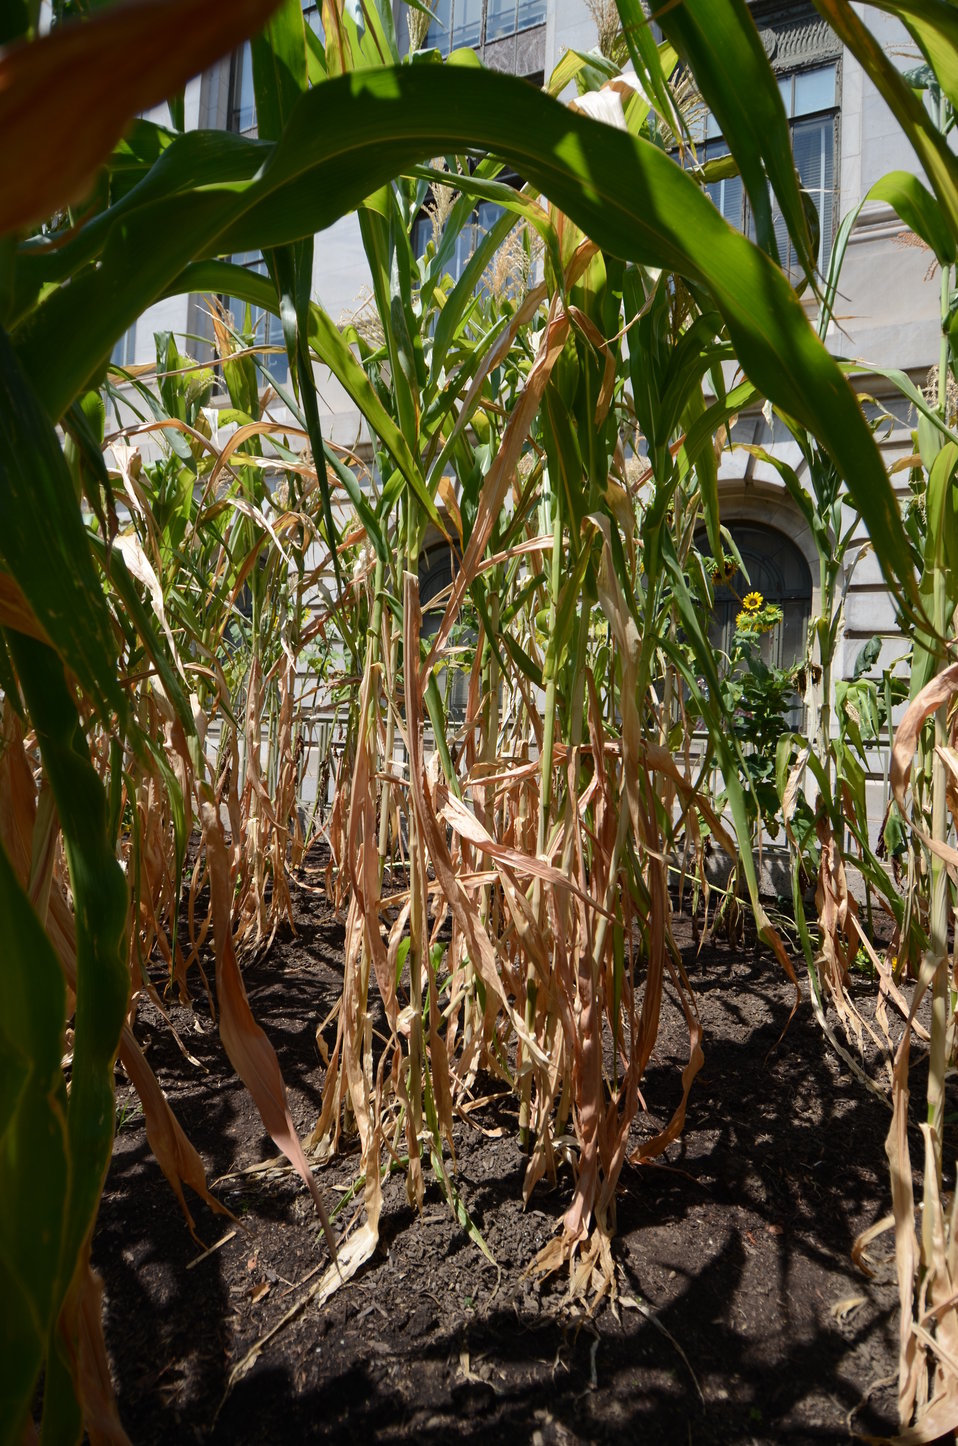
Corn stalks that some passersby said was past their harvest time in downtown Washington, DC at the Department of Agriculture. The yellow and brown leaves were telltale signs of a spent stalk and hot dry summer days. On Monday, August 1, 2011.